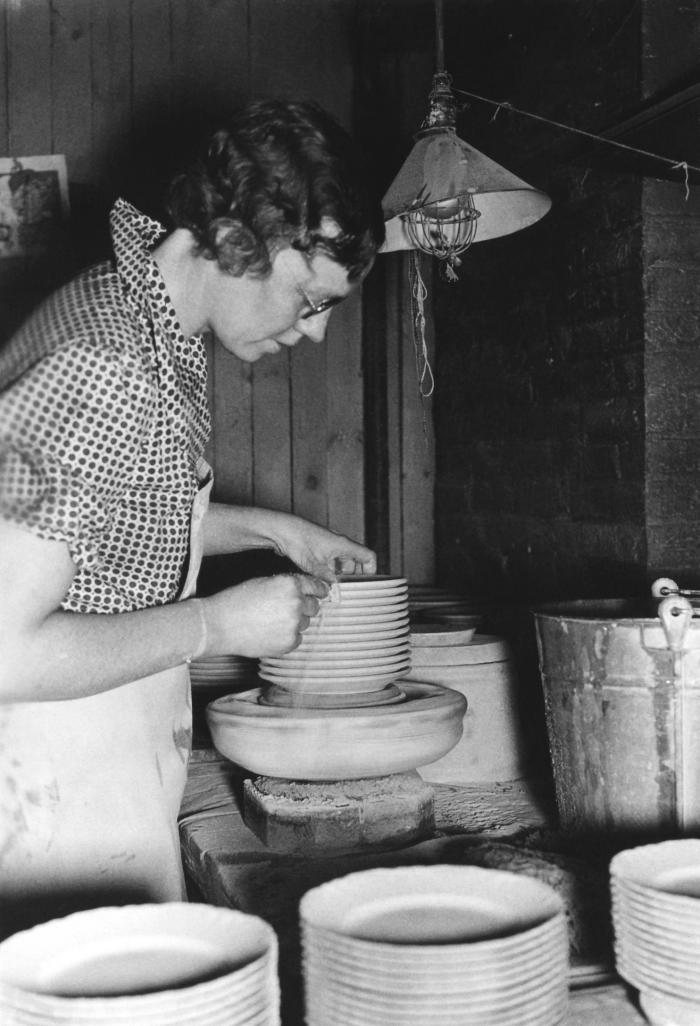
Provided by the Center for Disease Control's (CDC), National Institute for Occupational Safety and Health (NIOSH), this historic image depicted a female industrial worker who was inside a West Virginia ceramics factory seen here as she was trimming what looked to be greenware dishes. Greenware is newly formed clay pieces that have not been fired to what is termed a 'bisque' state. Working within a clay-processing environment, workers should have taken precautions against the possibility of inhaling airborne particulates, which would lead to the chronic pulmonary disease known as pneumoconiosis, or silicosis, or more commonly known as 'grinders' disease', characterized by the formation of nodular fibrotic changes in the lungs. Note that this woman was not wearing a filtered breathing mask, thereby, increasing her chances of contracting silicosis. The image was published in the 'Public Health Bulletin', No. 244, 1939.